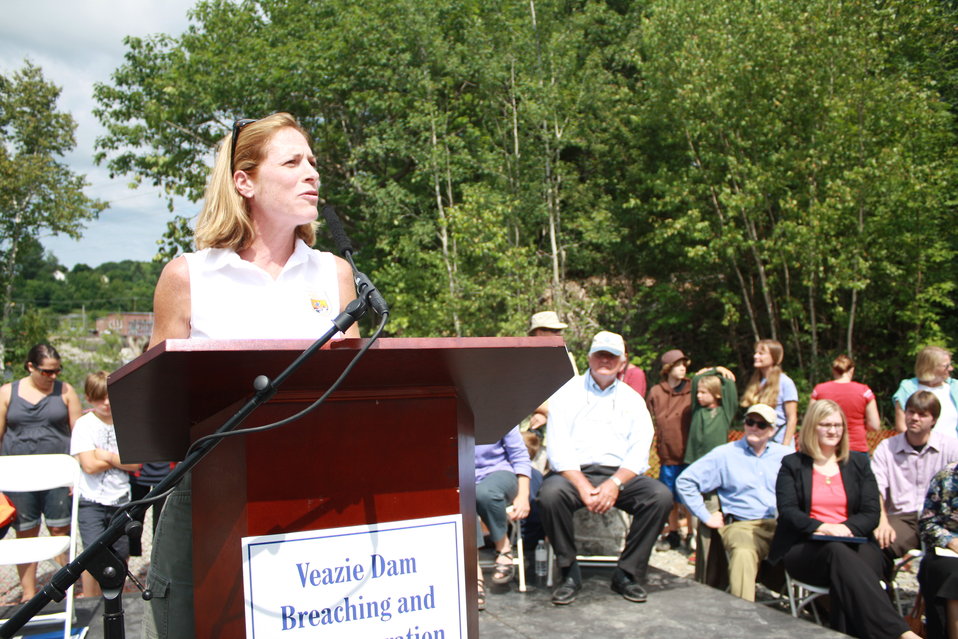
Veazie Dam Removal

U.S. Fish and Wildlife Service Northeast Regional Director Wendi Weber.